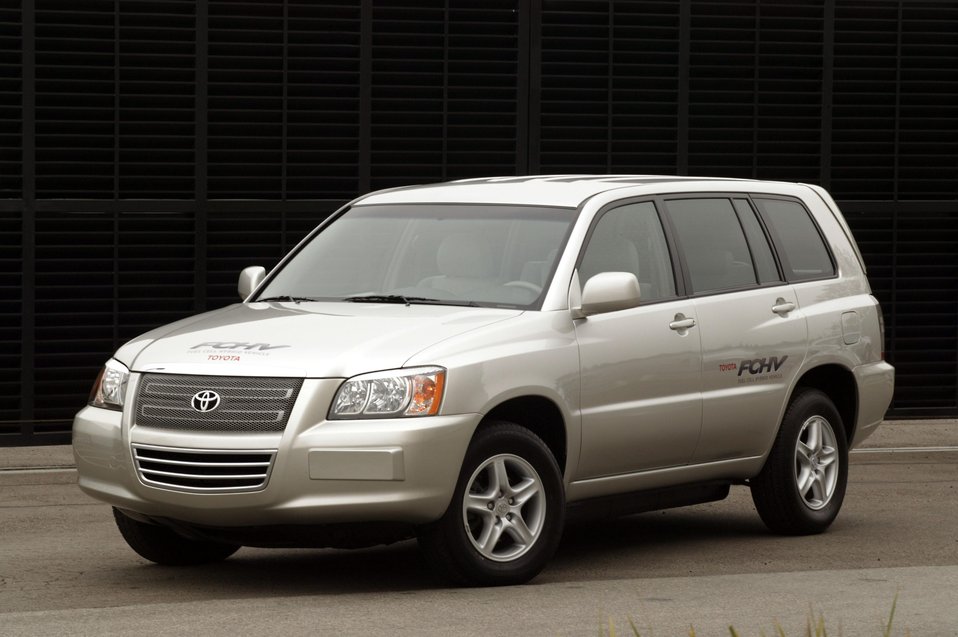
TOYOTA FCHV, FUEL CELL HYBRID VEHICLE.

FUEL CELLS HARNESS THE CHEMICAL ENERGY OF HYDROGEN TO GENERATE ELECTRICITY WITHOUT COMBUSTION OR POLLUTION. HYDROGEN AND FUEL CELLS HAVE THE POTENTIAL TO SOLVE SEVERAL MAJOR CHALLENGES FACING THE COUNTRY TODAY, SUCH AS DEPENDENCE ON PETROLEUM IMPORTS, POOR AIR QUALITY, AND GREENHOUSE GAS EMISSIONS.